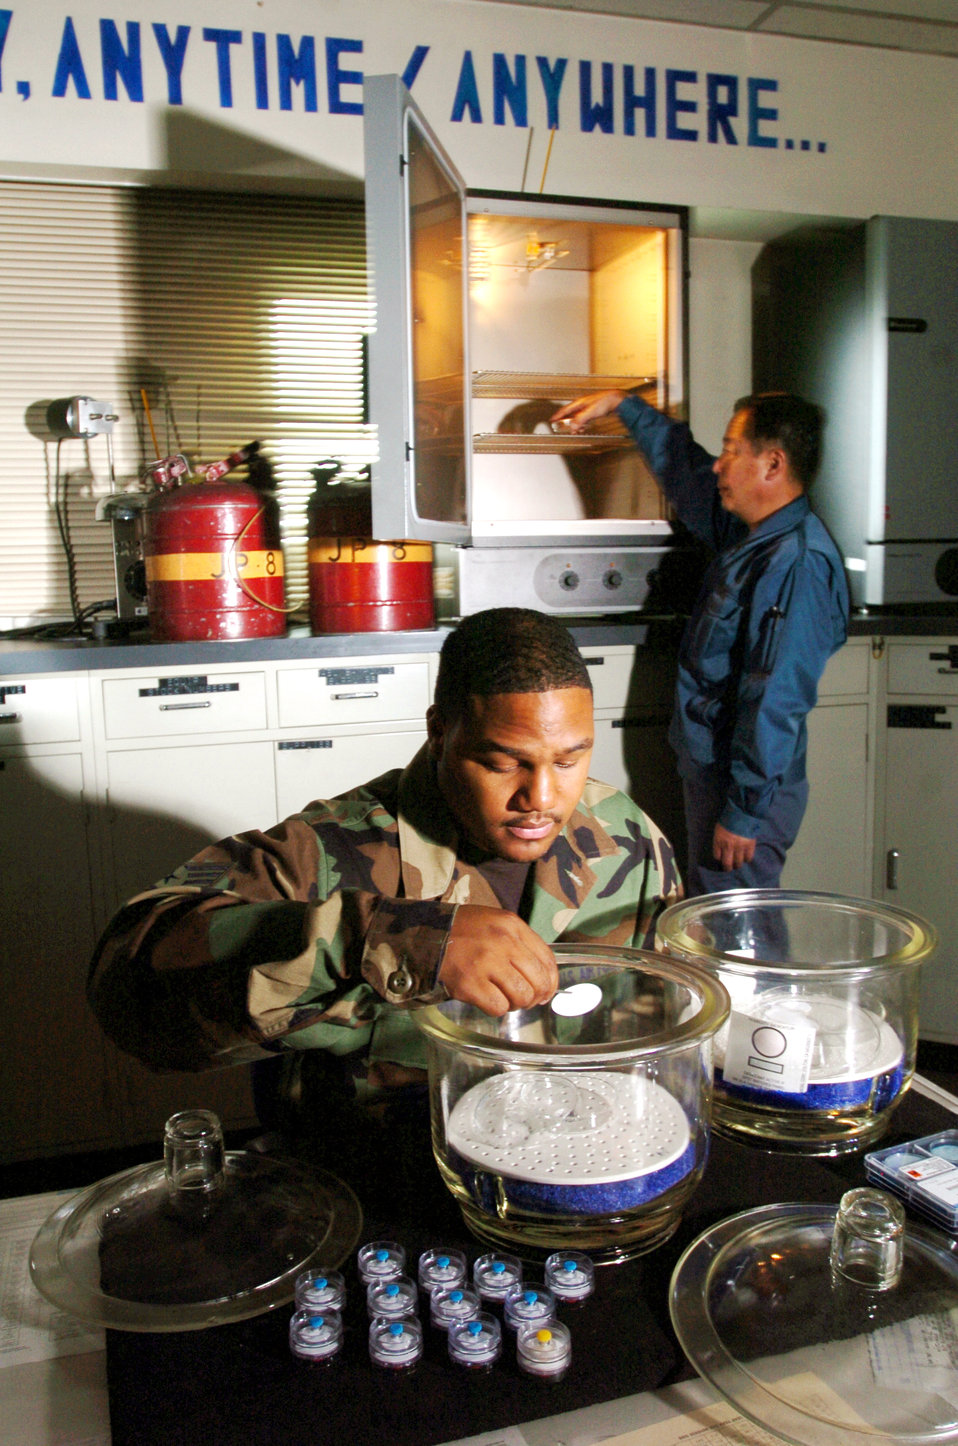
Technicians ensure safe, clean, serviceable fuel

YOKOTA AIR BASE, Japan -- Staff Sgt. Carmarius Johnson conducts a fibers test of a jet fuel sample from a fuel truck while Susumo Iwasaki places fuel filters in an oven during inspection here. They are inspecting the filters to ensure they are free of contaminants. They are fuels laboratory technicians with the 374th Logistics Readiness Squadron here.